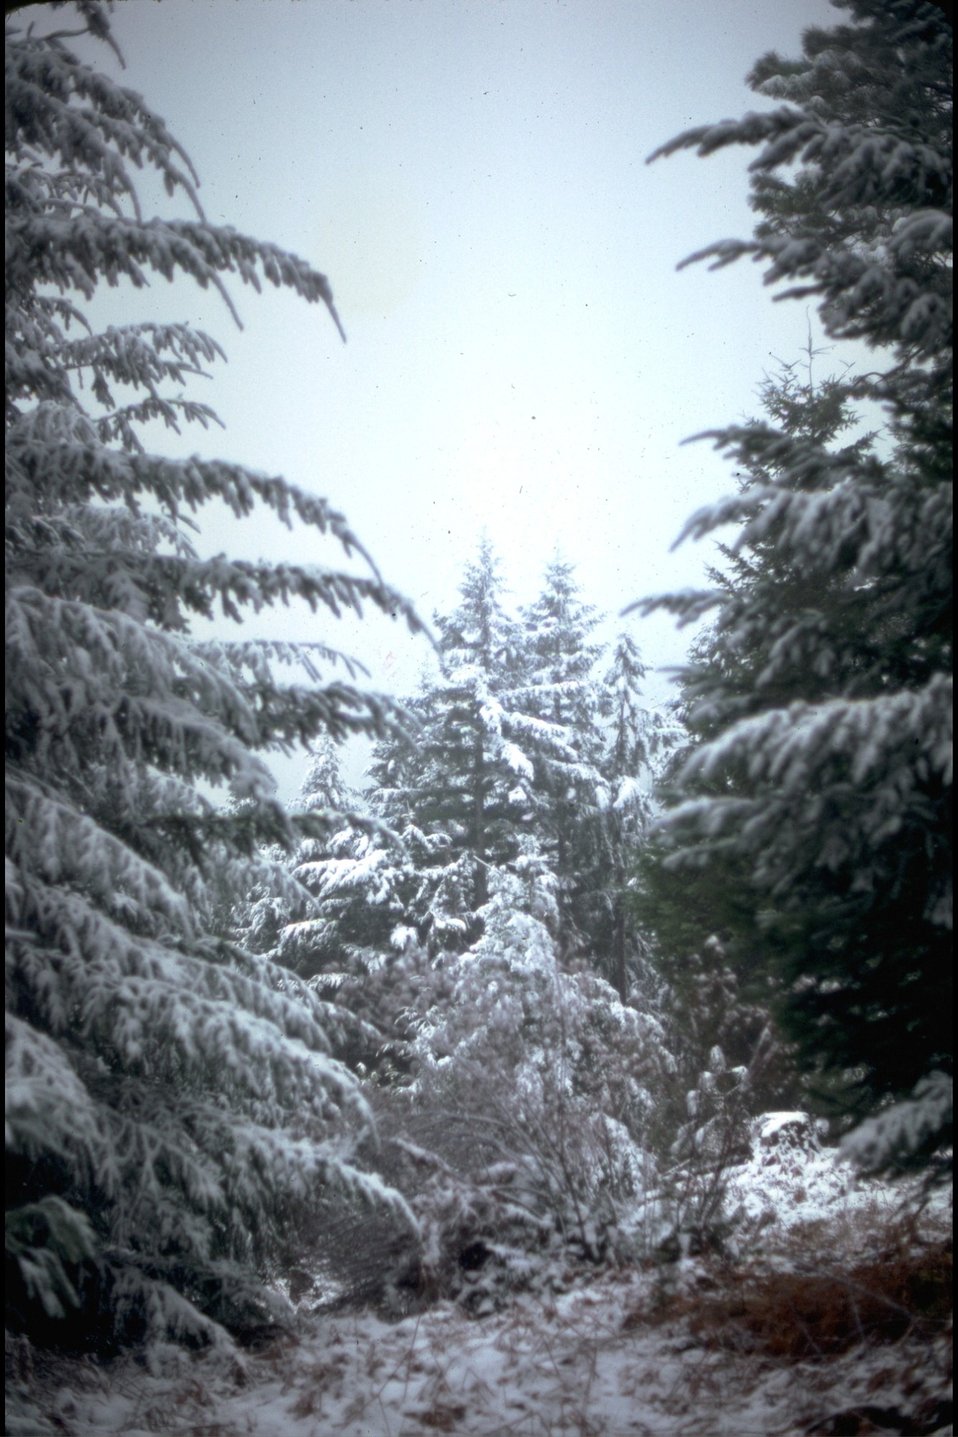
Wild Rogue River shuttle route, snow on Bald Ridge.